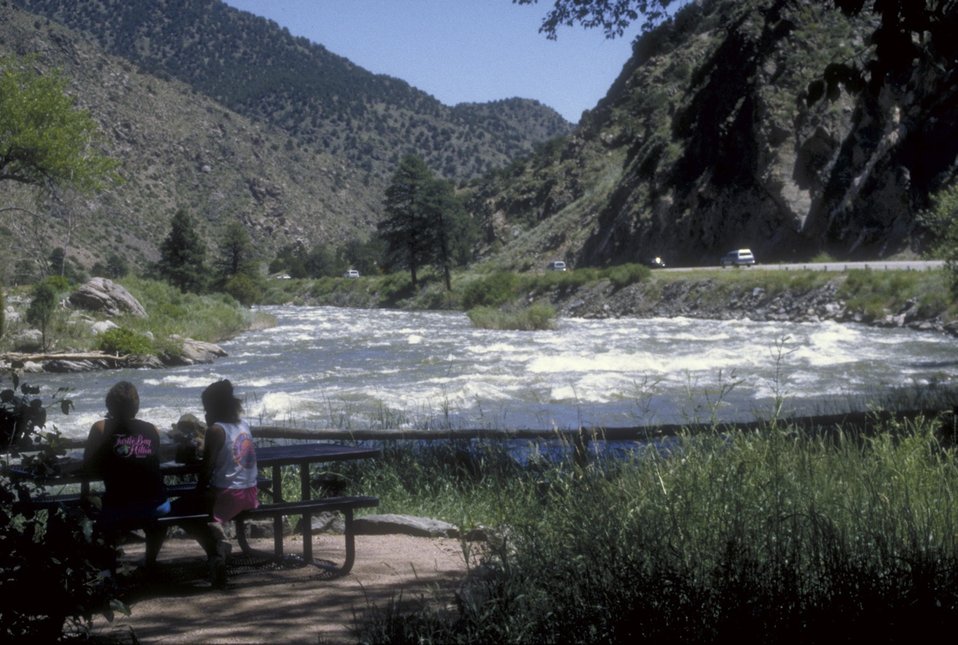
Picnicing along the Arkansas River